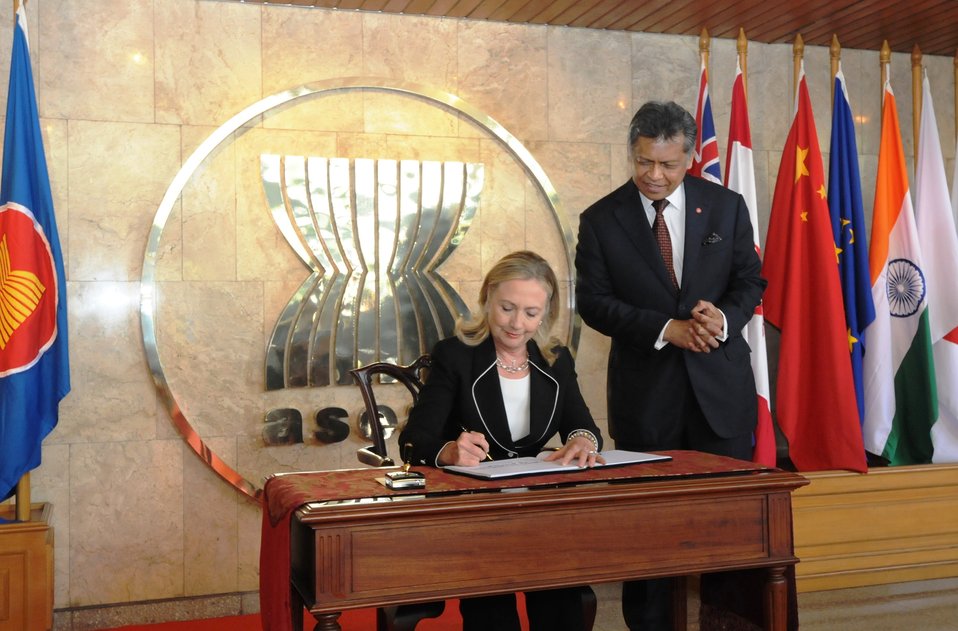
Secretary Clinton Signs the Guest Book at the ASEAN Secretariat

U.S. Secretary of State Hillary Clinton signs the guest book at the ASEAN Secretariat in Jakarta, Indonesia, prior to her meeting with ASEAN leaders, September 4, 2012. Accompanying Secretary Clinton is ASEAN Secretary General Dr. Surin Pitsuwan.